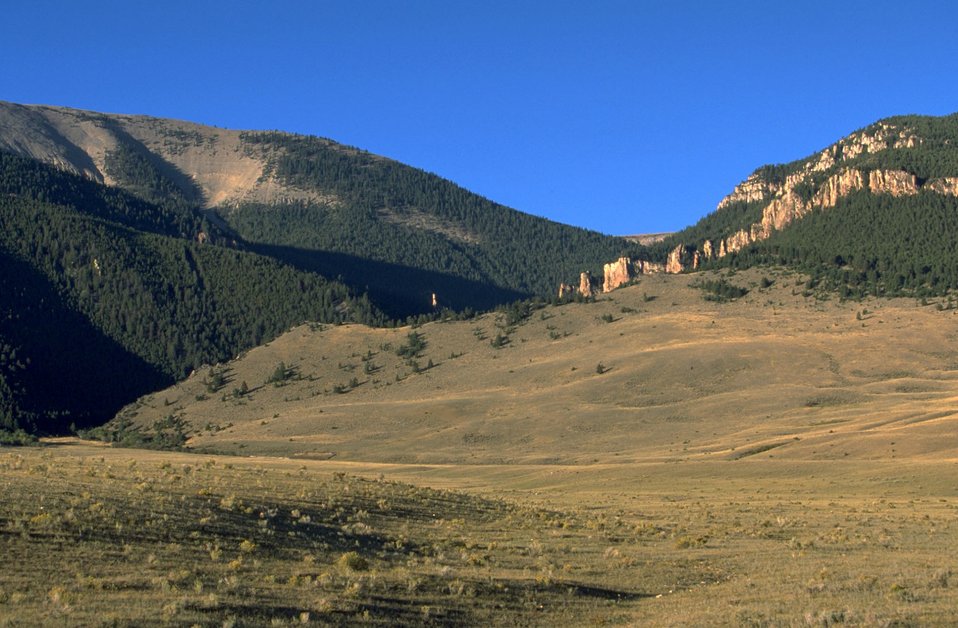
Valley floor with mountains in background